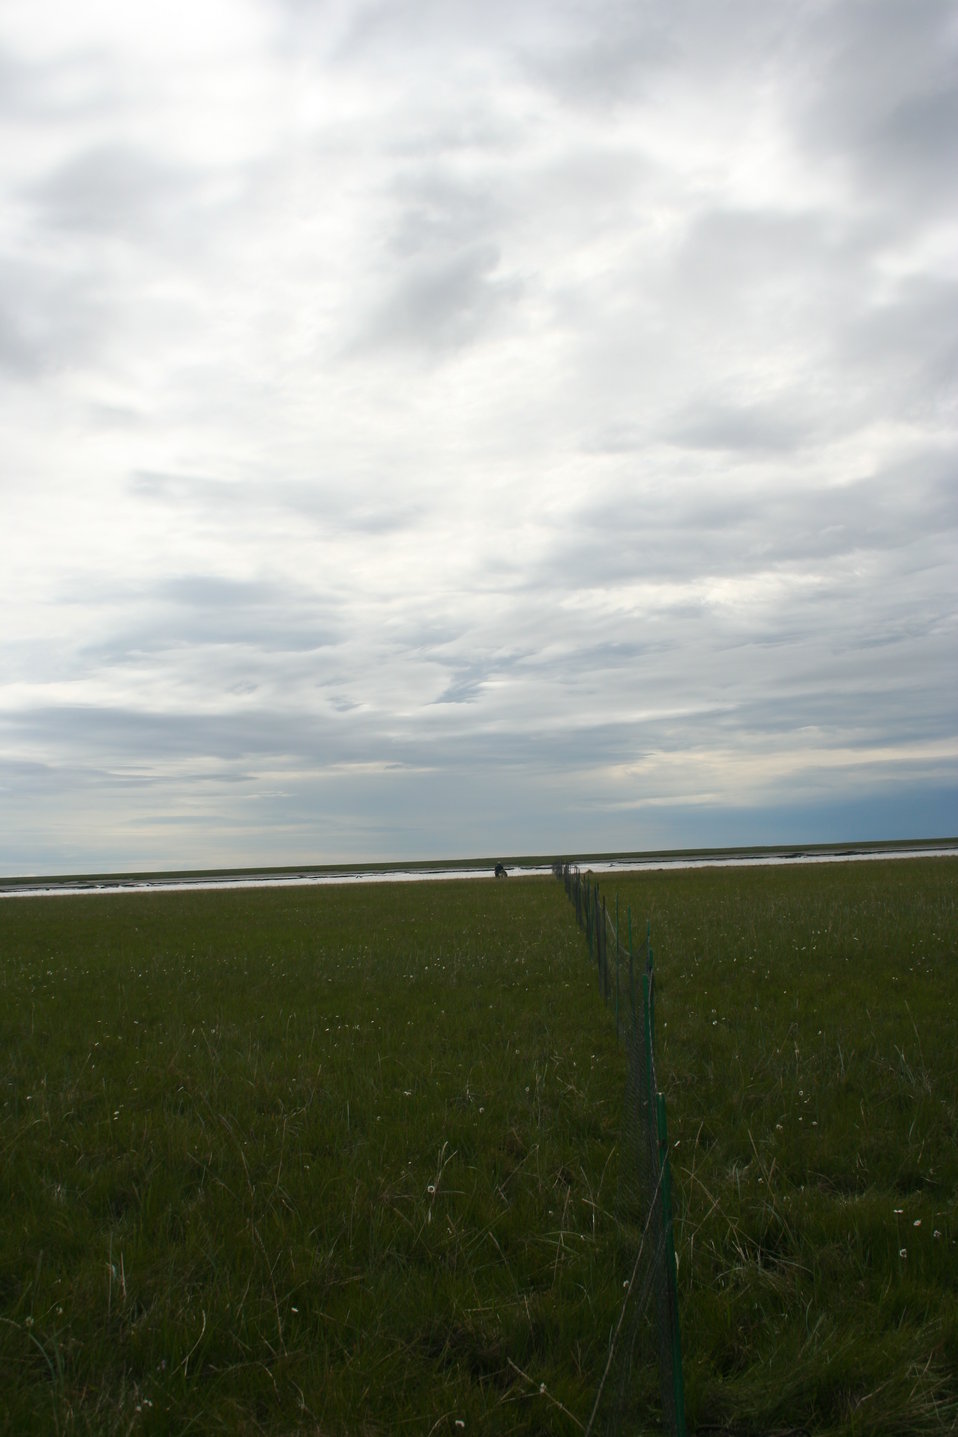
Lead lines are attached to the capture pot and strung out to form a V-shape that will 'lead' the birds right into the trap.

USFWS Yukon Delta NWR